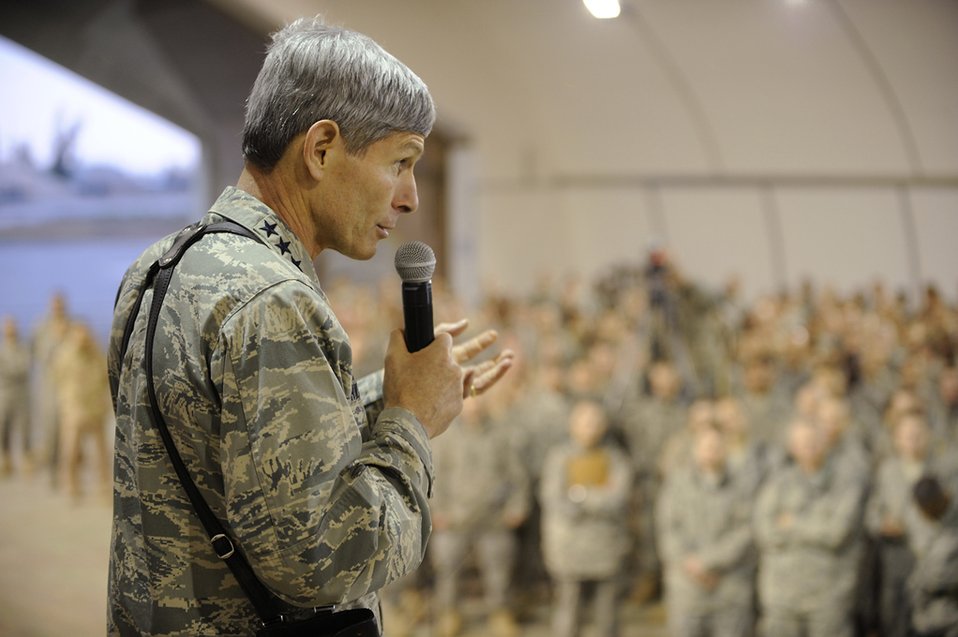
Chief of staff wraps up Middle East tour at Joint Base Balad

Air Force Chief of Staff Gen. Norton Schwartz speaks during an Airman's Call at Joint Base Balad, Iraq, Oct. 25. General Schwartz visited eight installations in the U.S. Central Command area of responsibility and Horn of Africa with Chief Master Sgt. of the Air Force Rodney McKinley.